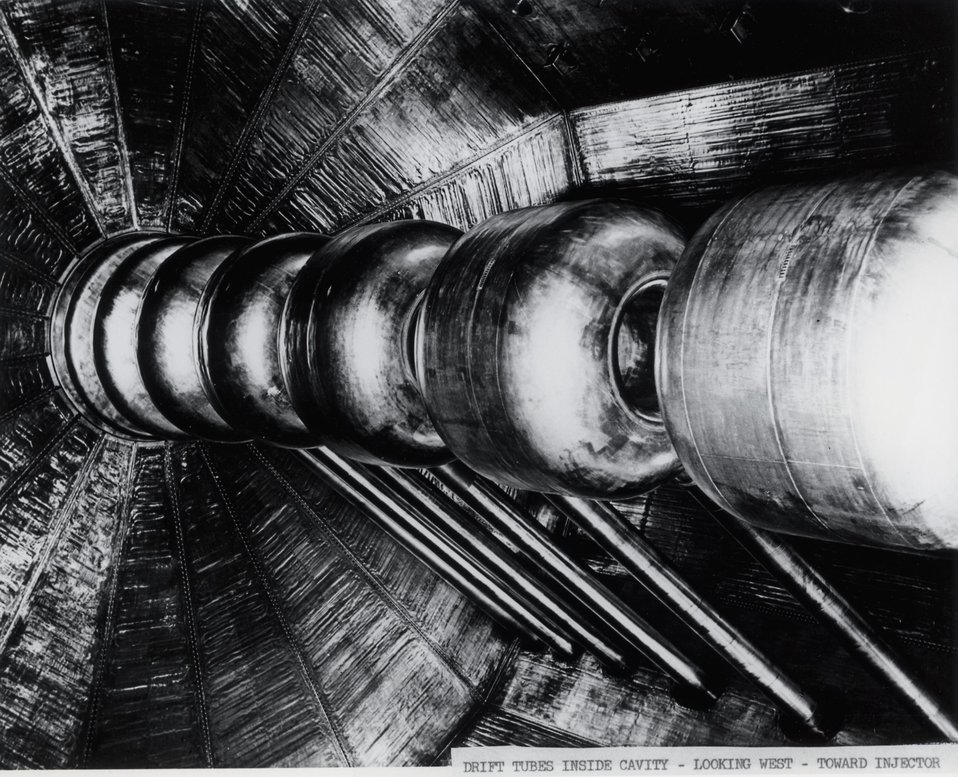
Linear Accelerator- drift tubes inside cavity, looking toward injector. Circa 1961.